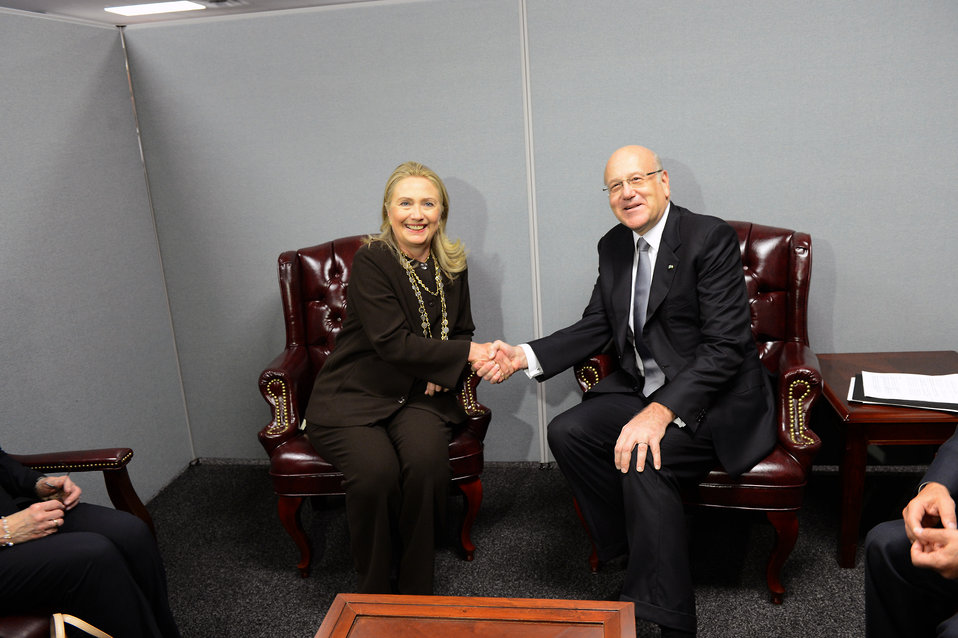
Secretary Clinton Meets With Prime Minister of Lebanon Mikati

U.S. Secretary of State Hillary Rodham Clinton meets with Prime Minister of Lebanon Najib Mikati at the United Nations in New York, New York on September 25, 2012.